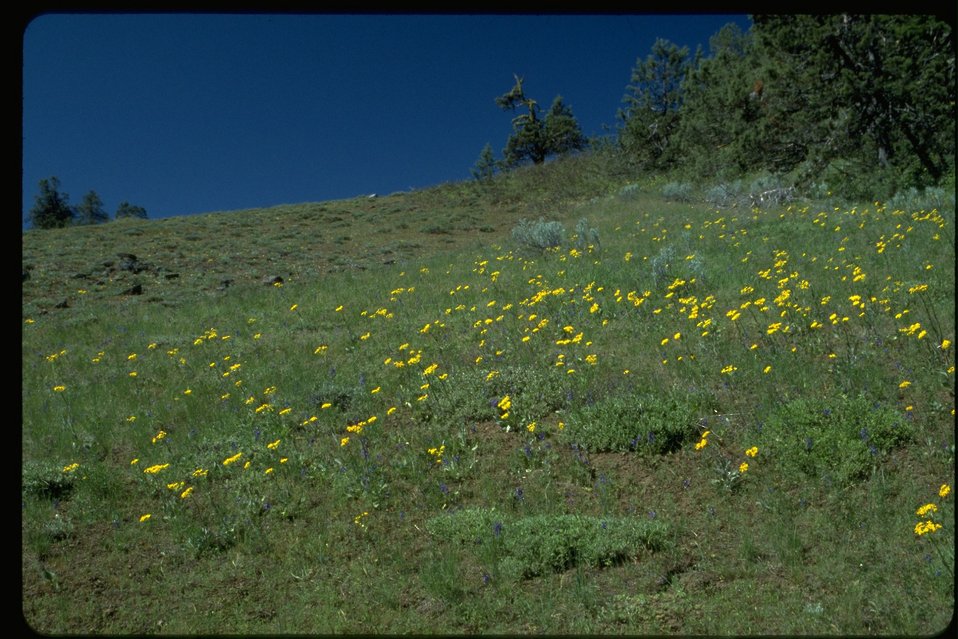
Long shot of Western Groundsel and Penstemon wildflowers.